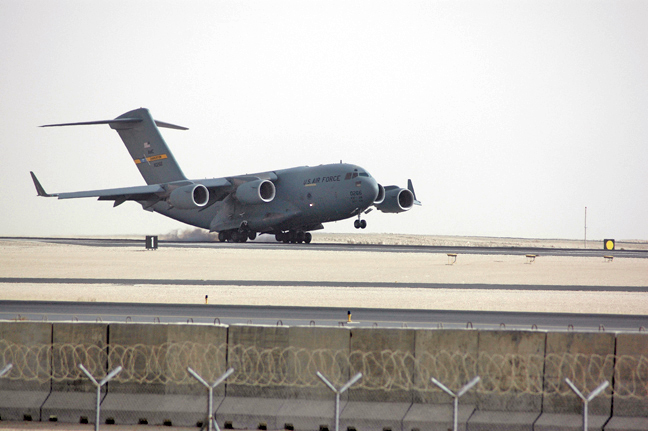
Dec. 20 airpower summary: C-17s support heavy airlift missions

A C-17 Globemaster III, like this one, performs tactical airlift and airdrop missions, transports passengers, delivers troop resupply and all types of cargo throughout Southwest Asia in support of Operations Enduring and Iraqi Freedom.